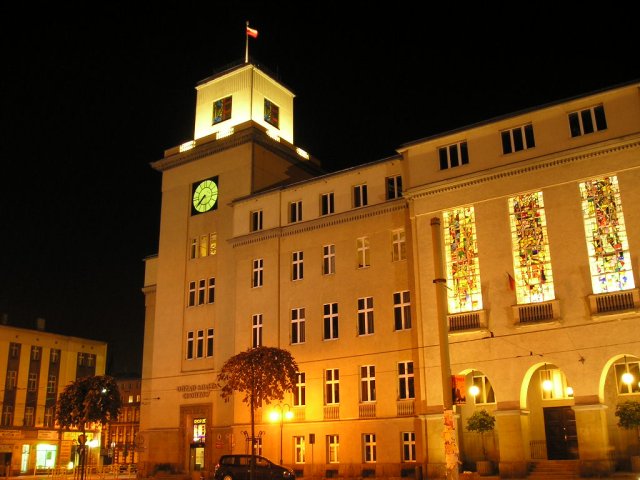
01-um-chorzów